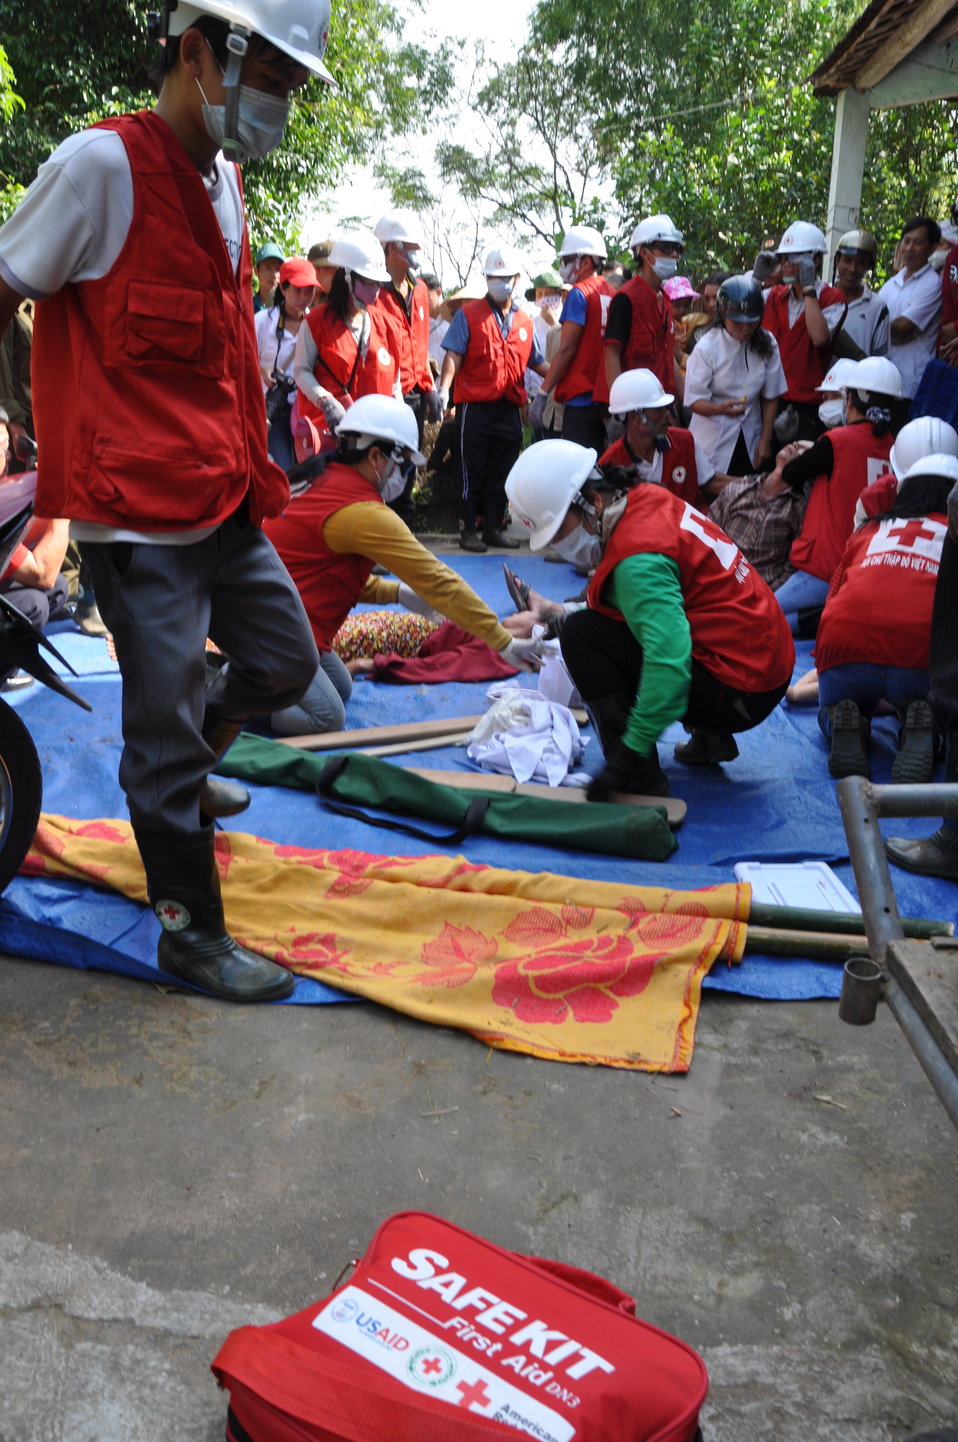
USAID, Red Cross Support Disaster Response Drill in Duy Hoa Commune, Quang Nam Province

Duy Hoa Commune, Quang Nam Province
December 5, 2012